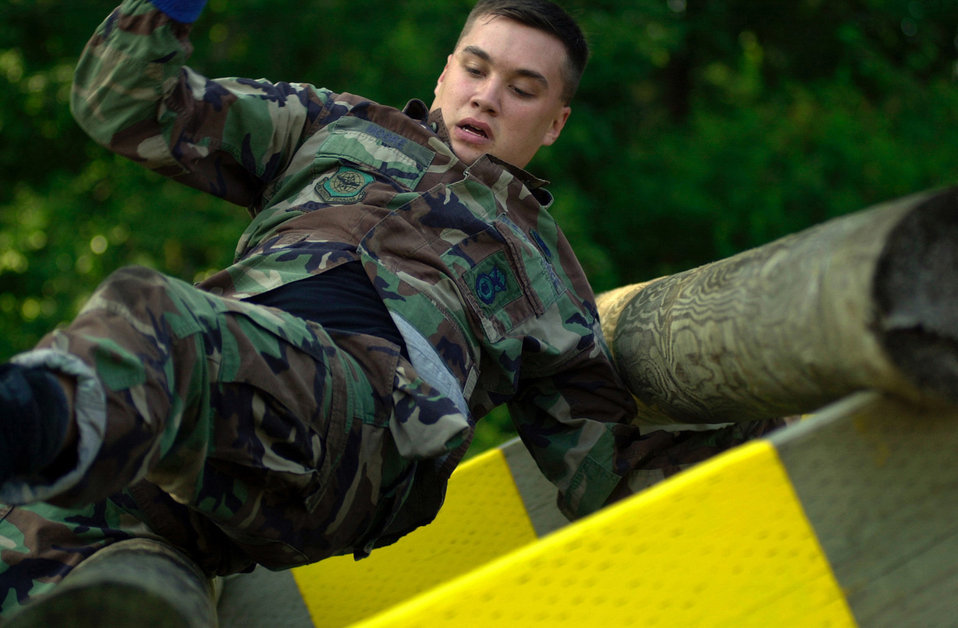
No obstacle too great

MCCHORD AIR FORCE BASE, Wash. -- Staff Sgt. Justin Moore takes on an obstacle during the combat endurance course at the Air Mobility Command Defender Challenge competition here.